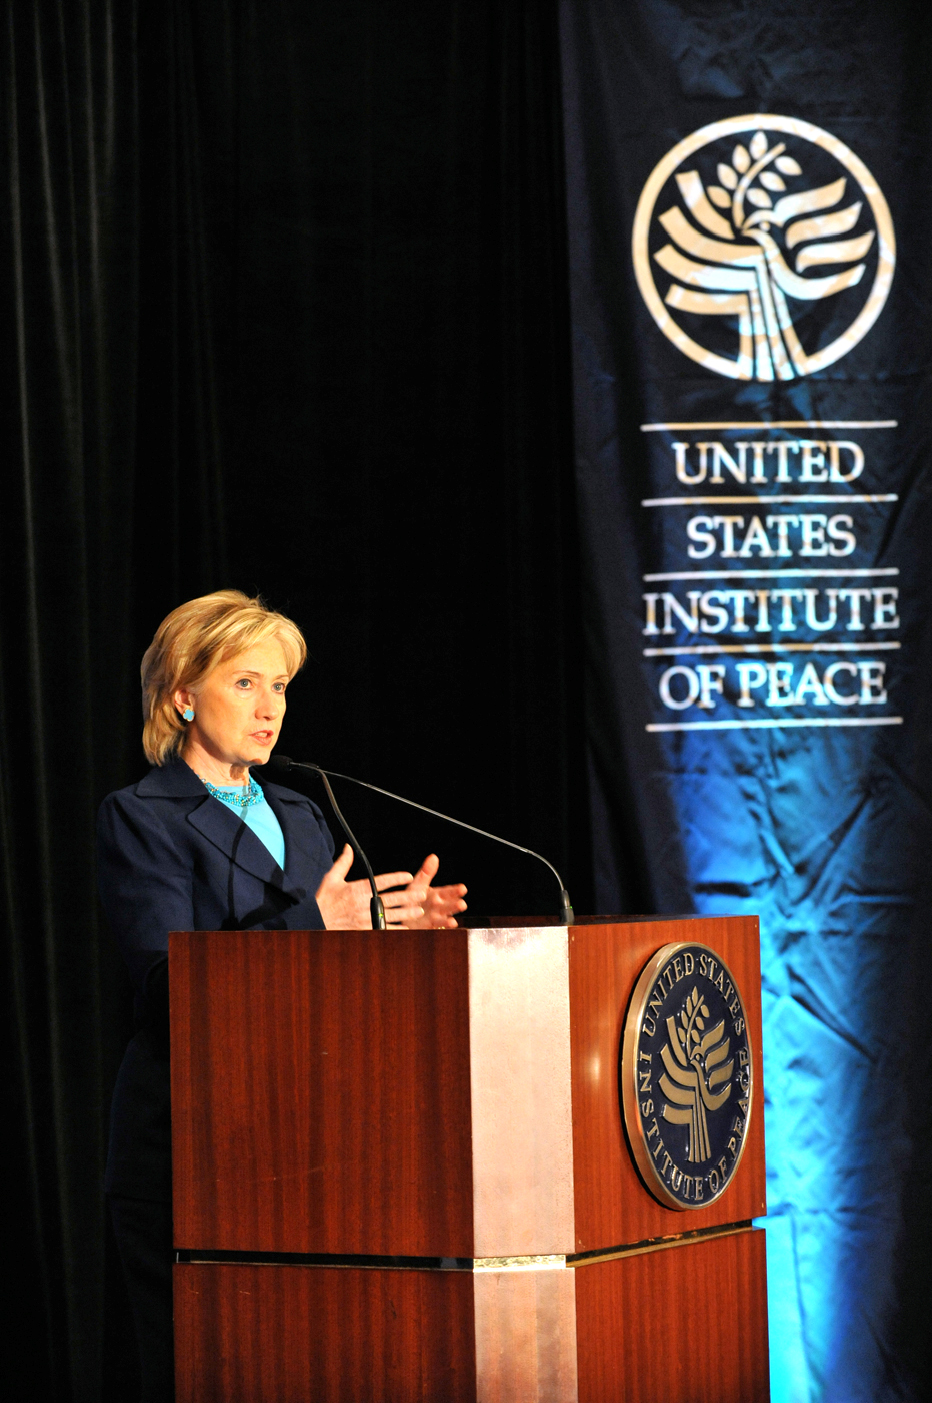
Secretary Clinton Remarks on Nonproliferation

U.S. Secretary of State Hillary Rodham Clinton provides remarks on Nonproliferation at the Renaissance Mayflower Hotel in Washington, DC October 21, 2009.